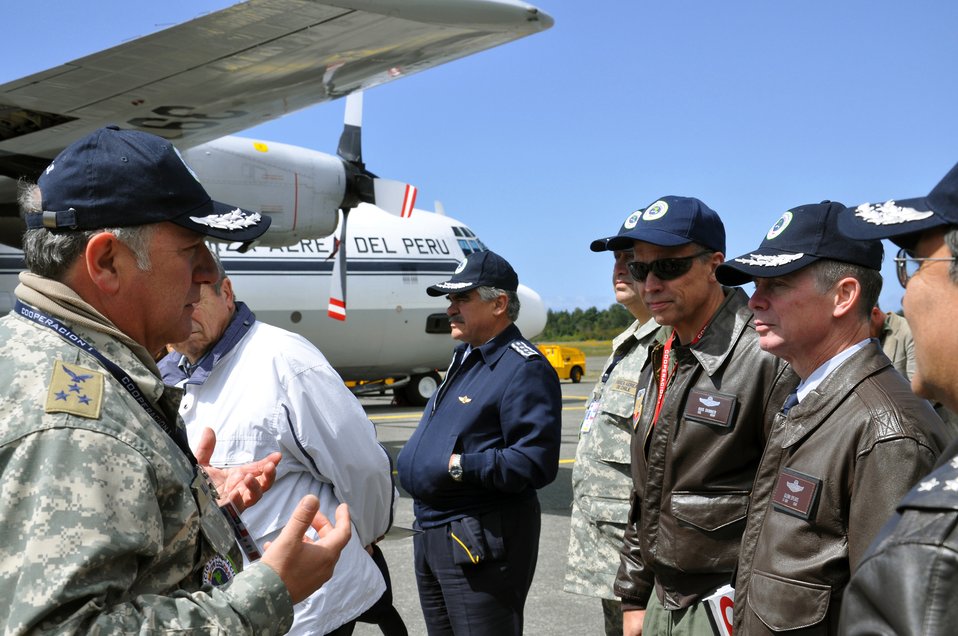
Co 1 PB

The Cooperacion 1 exercise director, Aviation General (two-star general) Luis Ili Delgado gives Lt. Gen. Glenn F. Spears, Lt. Col. Kris Skinner and other air force leadership of the Americas a tour of the exercise headquarters. The VIP event was part of a SICOFAA exercise, (Sistema de cooperacion de las Fuerzas Aerias de las Americas) Cooperation 1 headquartered in Puerto Montt, Chile, Oct. 4 to 14. The exercise scenario involved using the air forces of SICOFAA member nations for humanitarian assistance after a natural disaster. General Spears is the 12th Air Force commander. Colonel Skinner is the secretary general of SICOFAA.